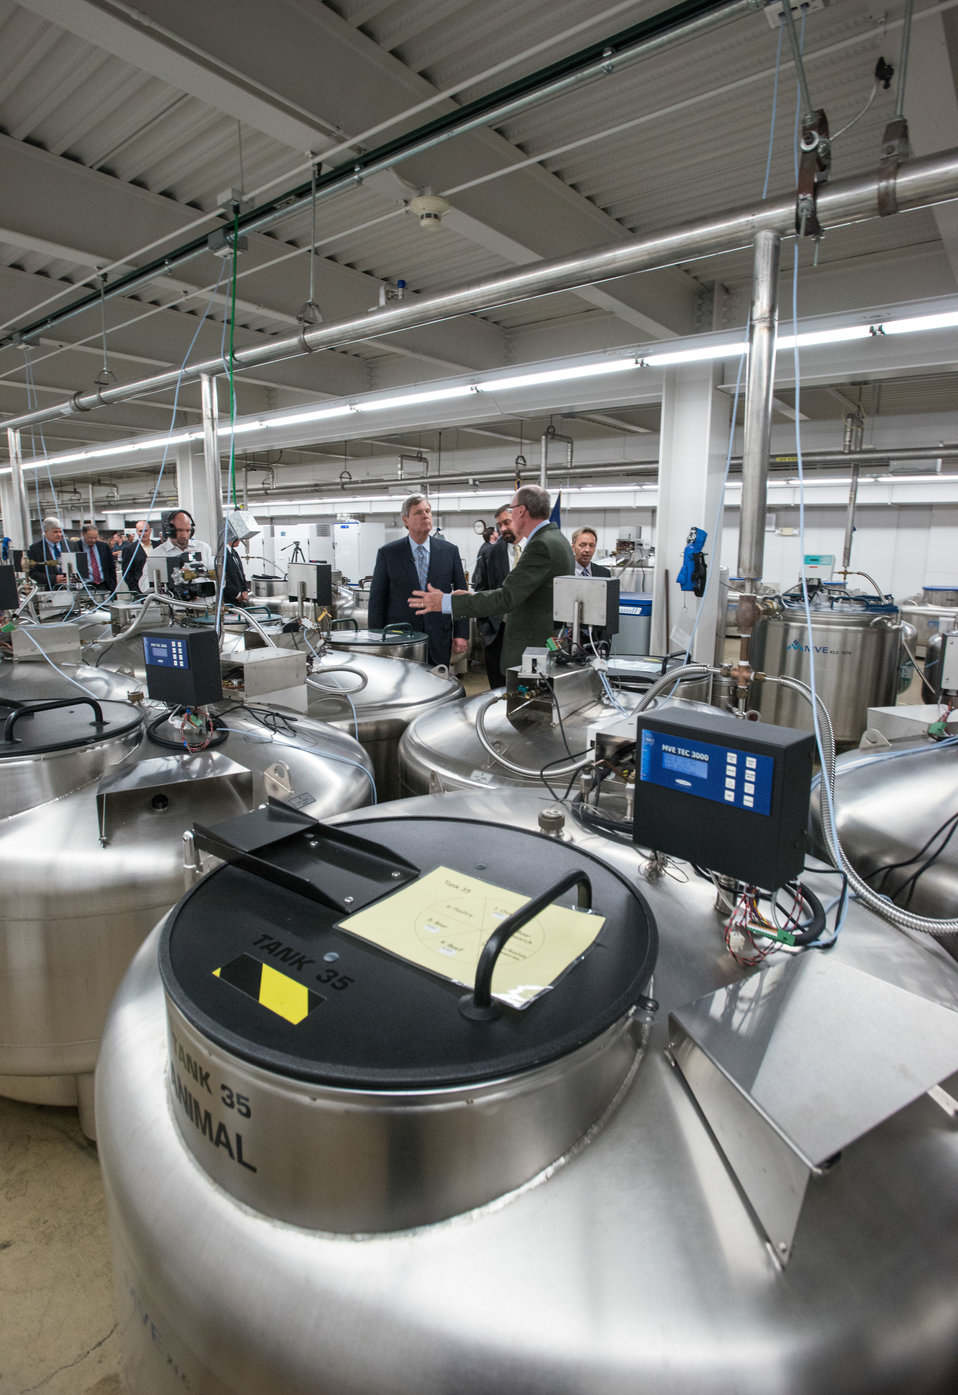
(L to R) Agriculture Secretary Tom Vilsack and Colorado State University (CSU) President Dr. Anthony Frank, and U.S. Department of Agriculture (USDA) Agriculture Research Service (ARS) National Center for Genetic Resources Preservation (NCGRP) Research Leader Geneticist Dr. David Dierig listen to National Animal Germplasm Program (NAGP) Program Leader Animal Geneticist Dr. Harvey Blackburn (foreground) speak about the Cryogenic Storage Facility, in Ft. Collins, CO on Wednesday, Nov. 6, 2013. The Cryogenic Storage Vault operates more than 45 cryogenic tanks that hold animal germplasm, plant tissue culture, and seeds that are stored at -196 °C (-321 °F) in liquid storage or to -193 °C (-315 °F) in vapor storage. NCGRP houses the NAGP, which preserves more than 750,000 units (eggs, semen, embryos) of animal germplasm for more than 150 animal and aquacultural breeds and species. Samples of dairy cattle, beef cattle, and swine comprise more than 80% of the total collection of animal germplasm. NCGRP is the largest agricultural gene bank facility in the U.S. The NCGRP staff conducts groundbreaking research to develop more efficient and effective means for preserving plant and animal germplasm, and for better understanding the genetic structure of these invaluable materials. The research findings, preservation techniques, and specialized technology developed by the NCGRP have been adopted by gene banks around the world: many international scientists travel to the NCGRP for research and training.